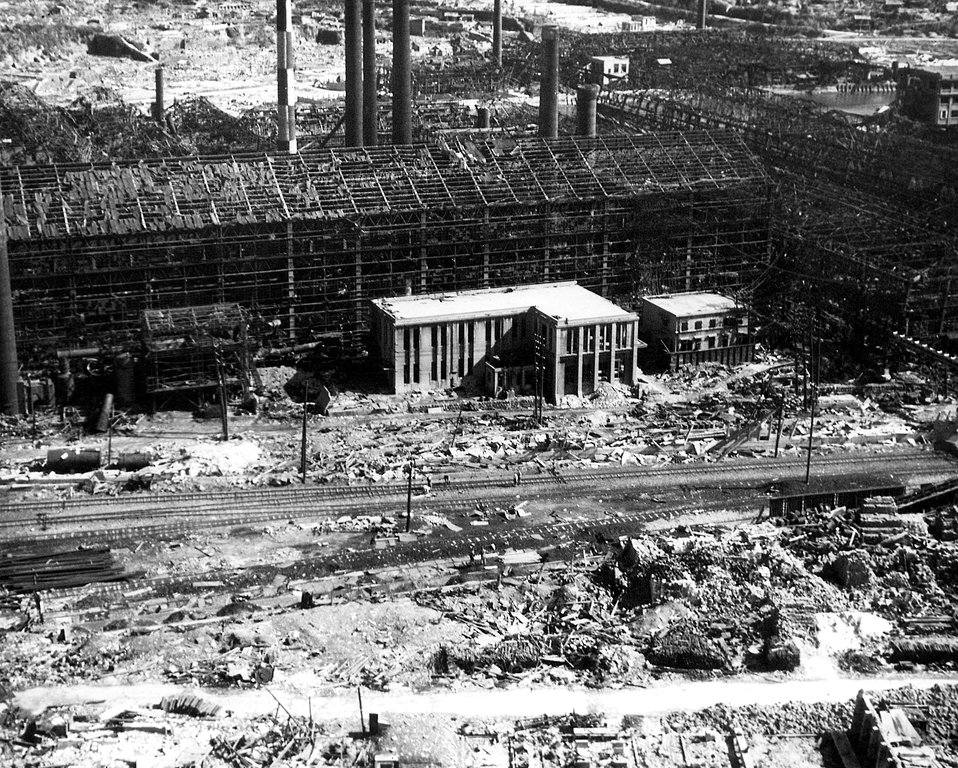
ATOMIC BOMBING OF JAPAN